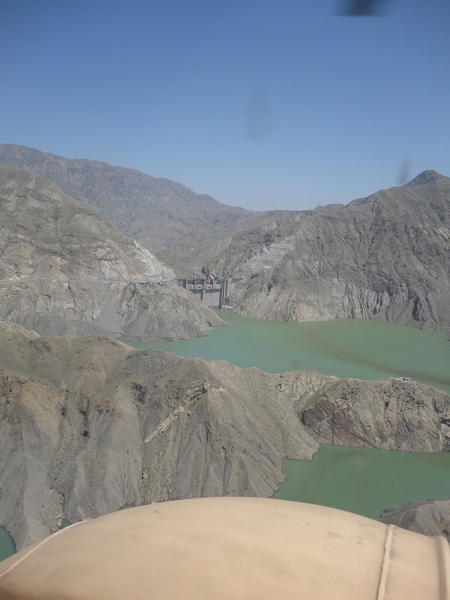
Gomal Zam 3